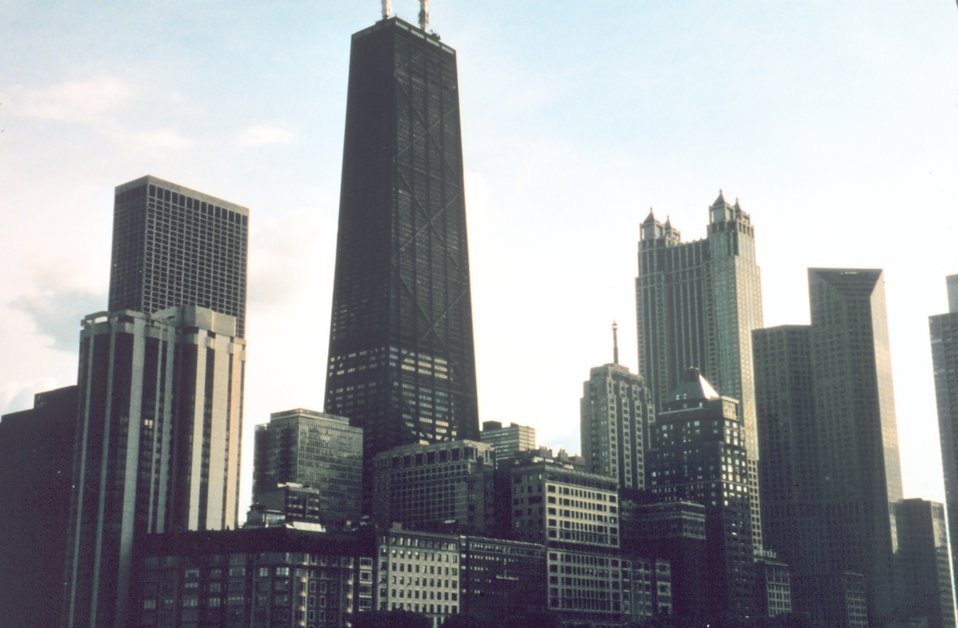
Lake Michigan waterfront